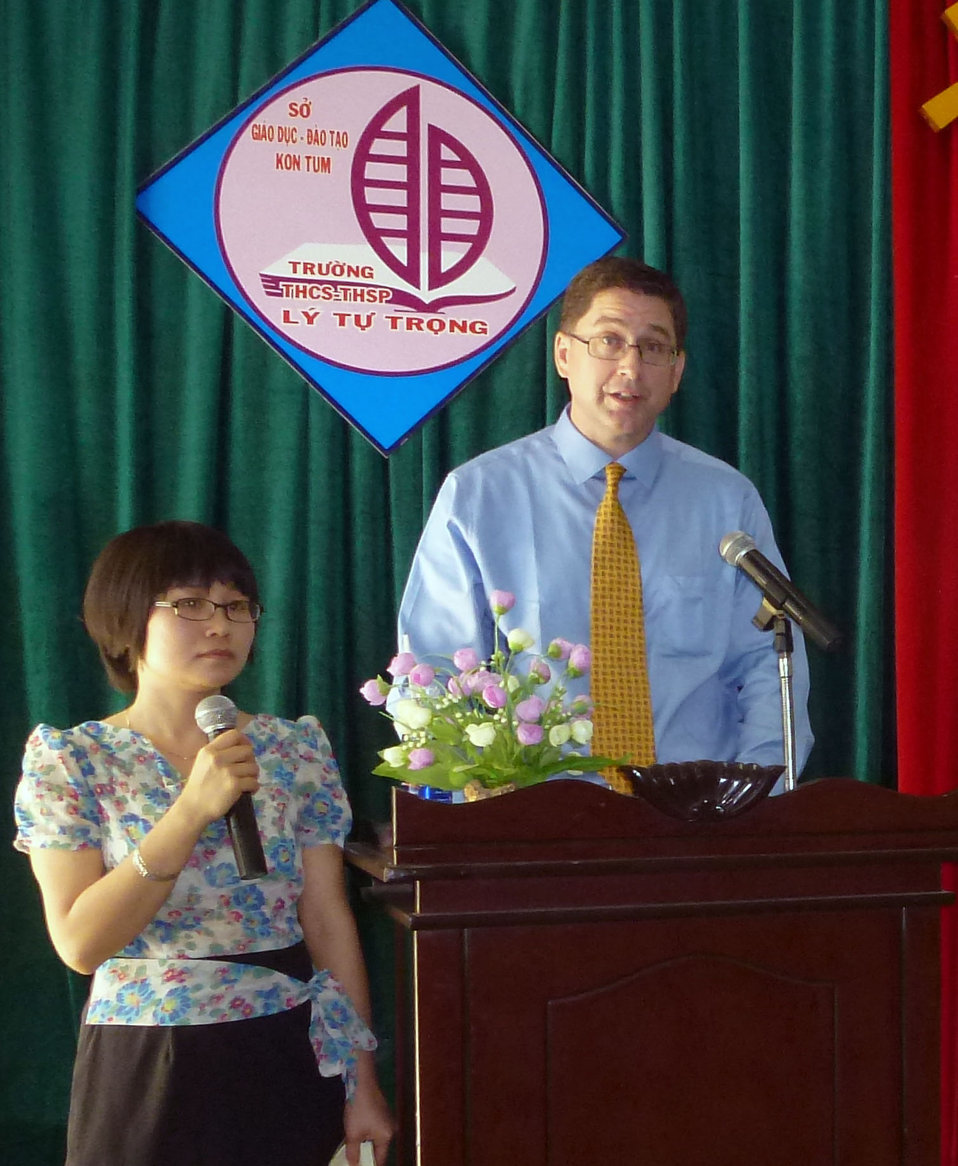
USAID Office of Health Director Jonathan Ross speaks at an eyeglass handover ceremony in Kon Tum